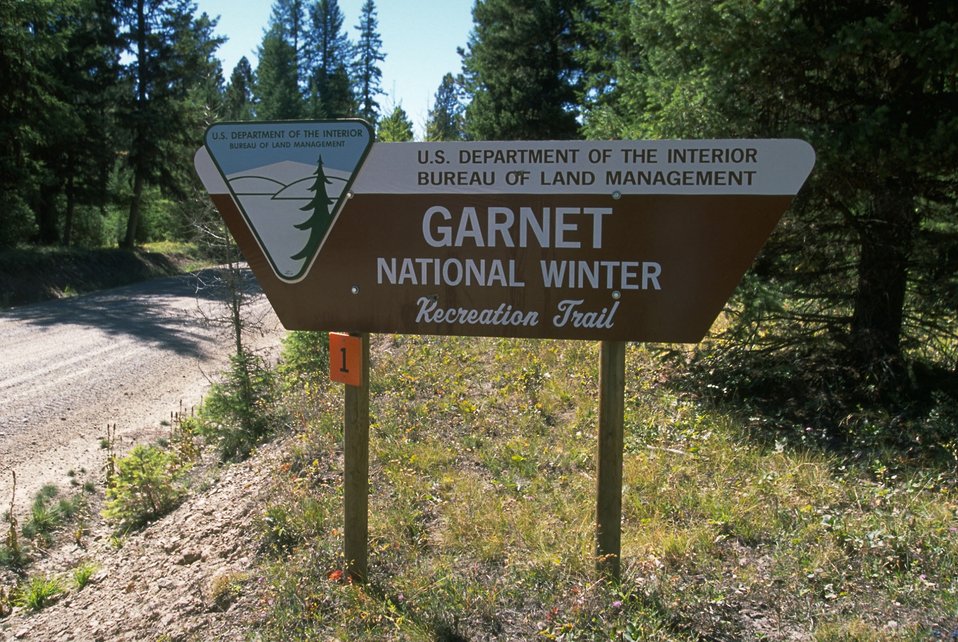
Garnet National Winter Recreation Trail sign